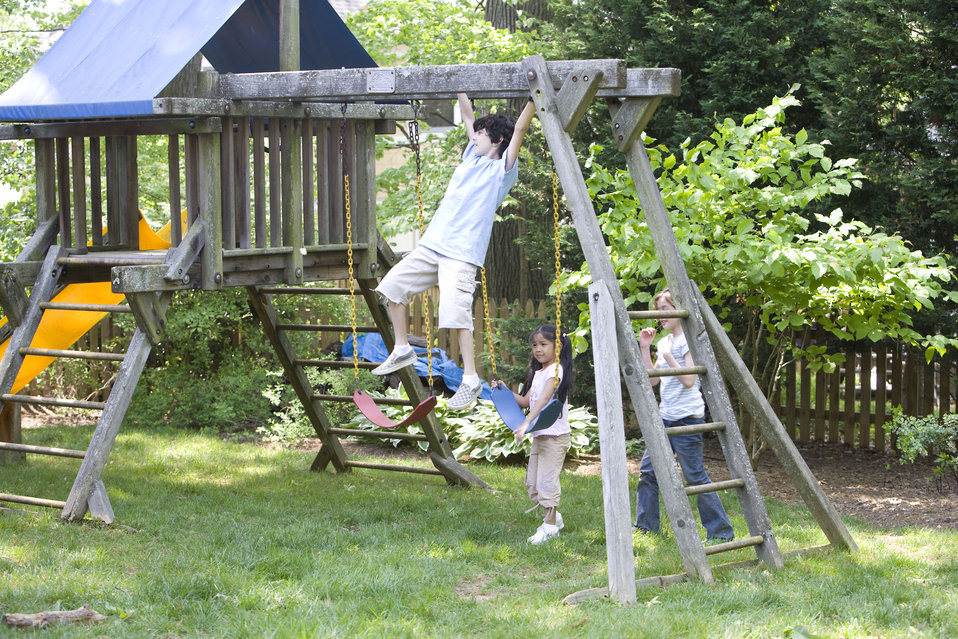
Children love playing outside, and these children were thoroughly enjoying their wooden swing set, and all were having fun in the fresh outdoor air, and the beautiful weather. It's important to note that older wooden playsets may have been treated with arsenic and/or creosote, and therefore, parents need to know if these chemicals were used in their manufacture.